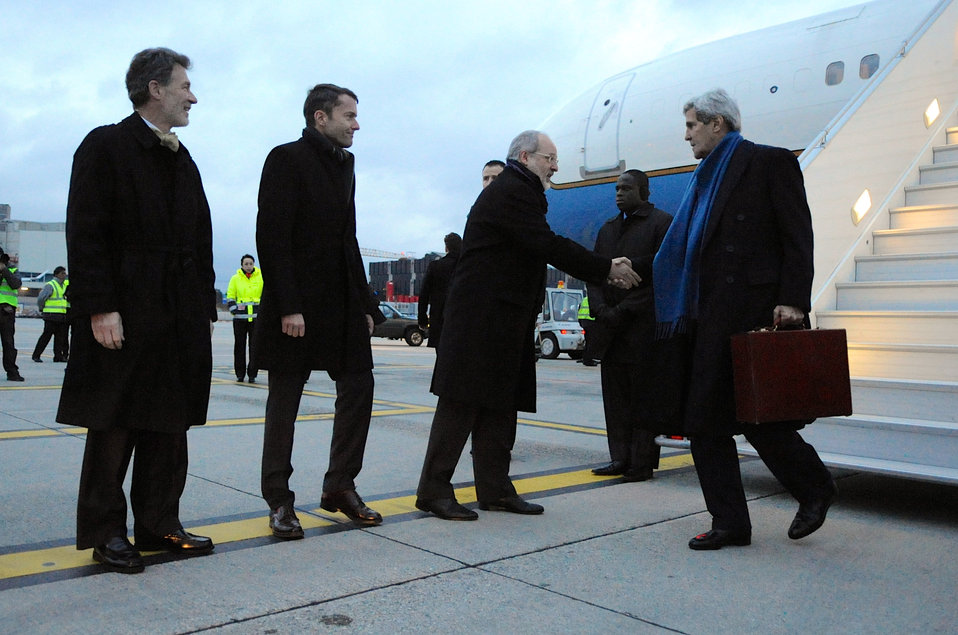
Secretary Kerry Greeted Upon Arrival in Geneva

U.S. Secretary of State John Kerry is greeted by (right to left) Ambassador Alexandre Fasel of the Swiss Mission in Geneva, Ambassador Jurg Lauber of the Swiss Ministry of Foreign Affairs, and U.S. Charge de Affaires Peter Mulrean as he arrives in Geneva, Switzerland, on November 23, 2013, for meetings focused on Iran's nuclear capabilities.